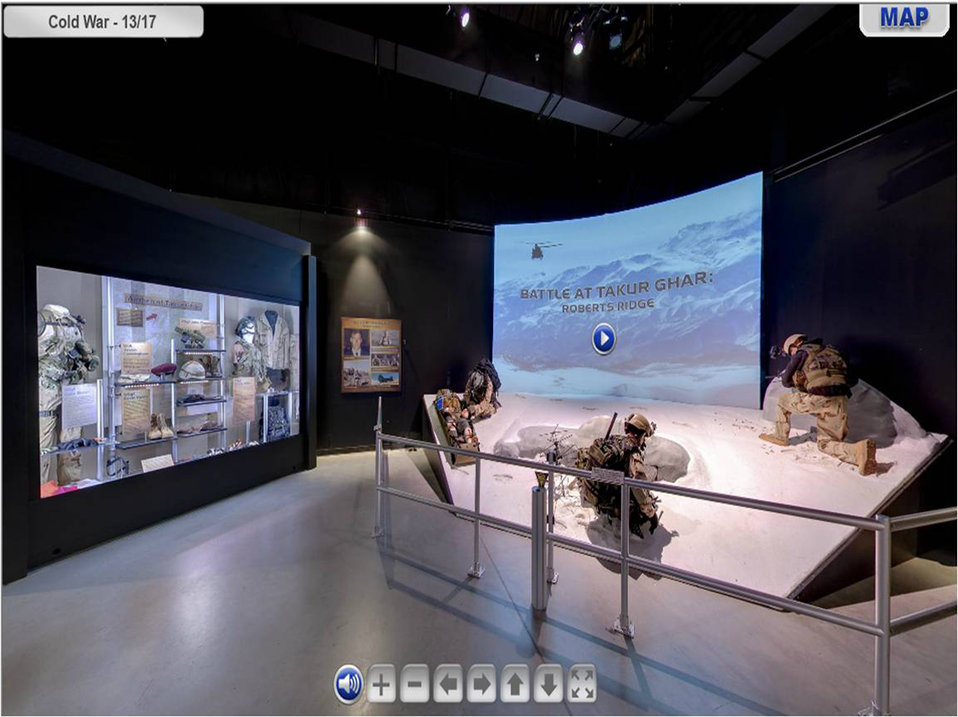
Air Force Museum offers virtual tour

A screenshot of